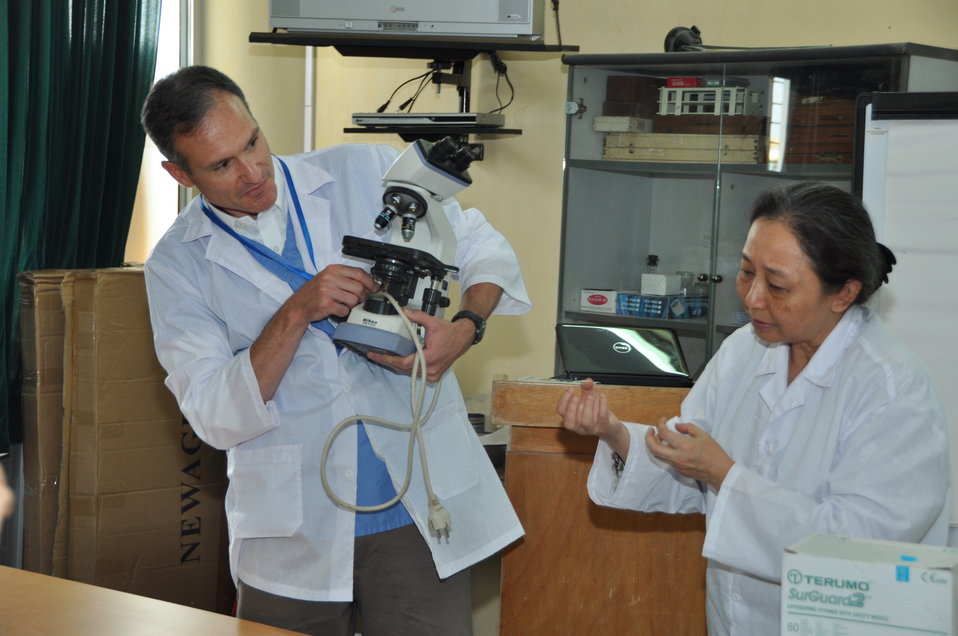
USAID EPT Smithsonian Pathology Training to Detect Emerging Infectious Diseases Wildlife and Other Animals in Vietnam Workshop